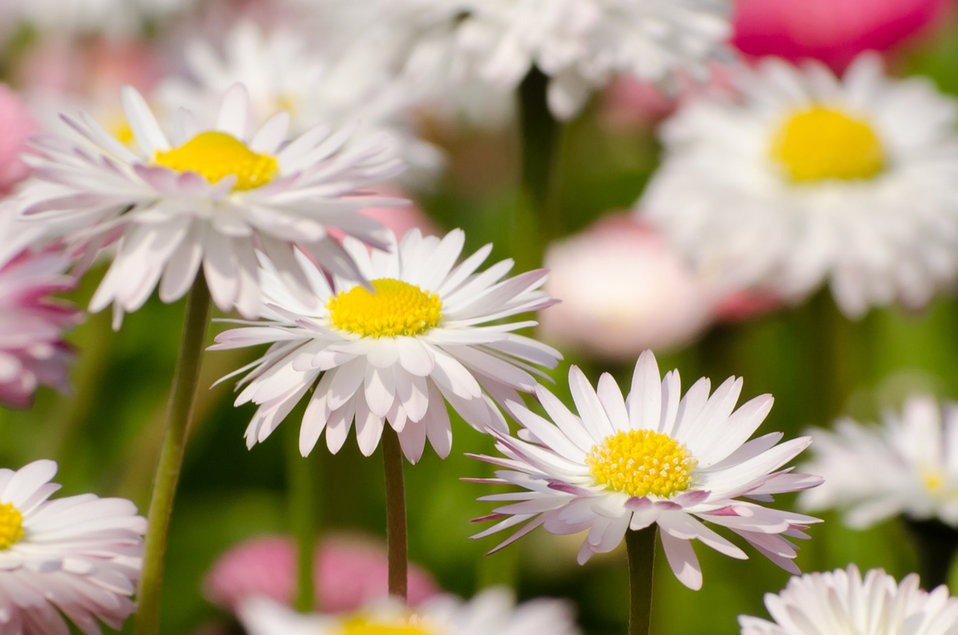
Flowers - background.